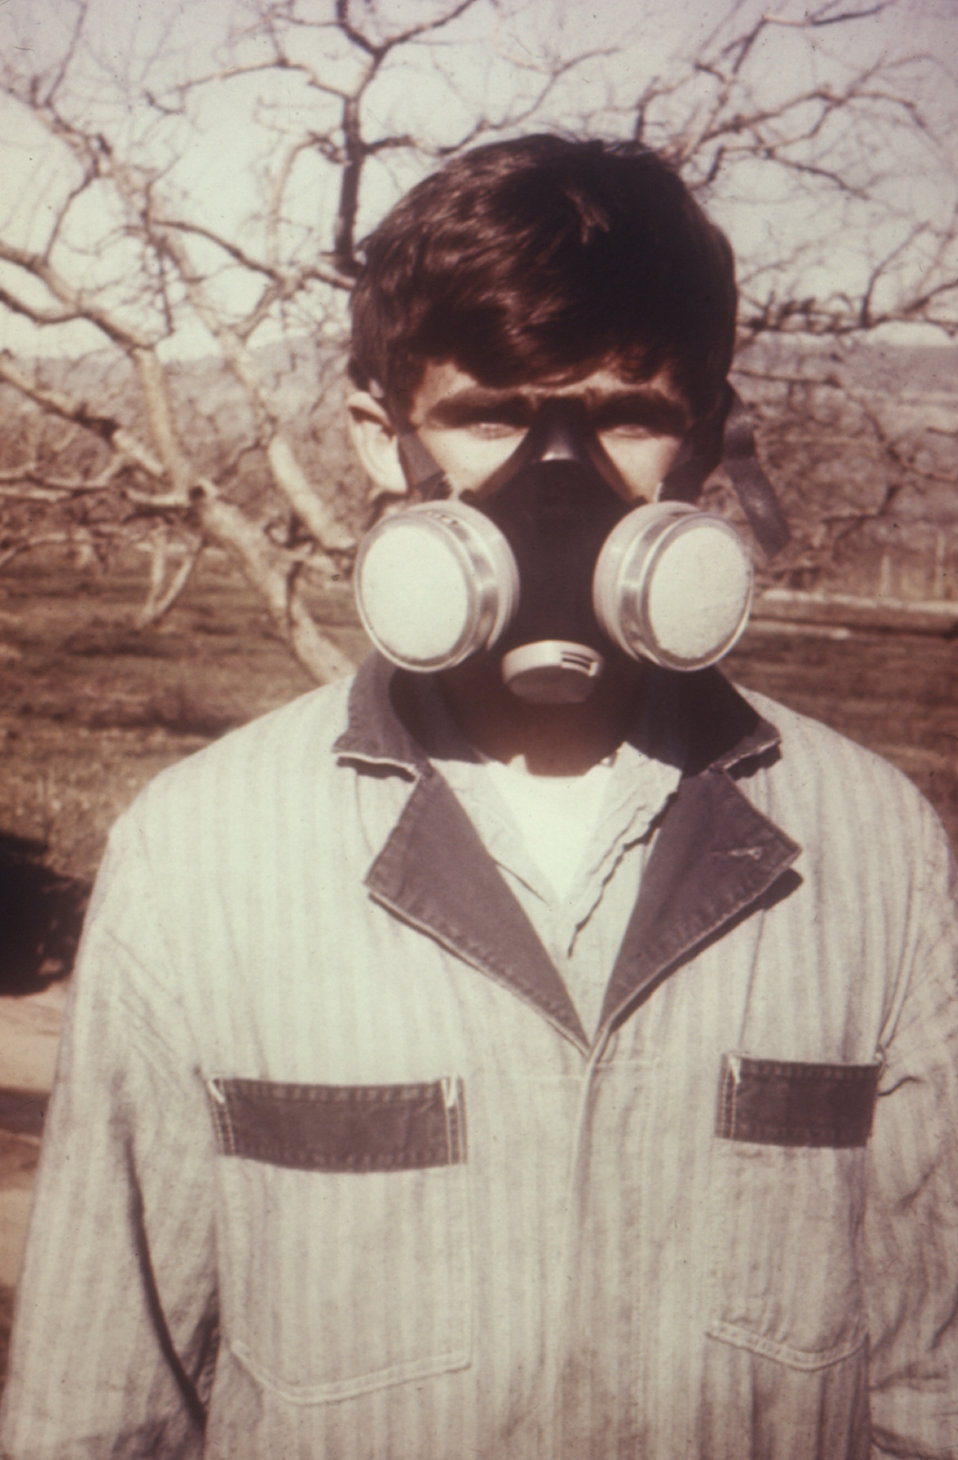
This individual was demonstrating the types of protective clothing worn by pesticide workers during the 1970's.